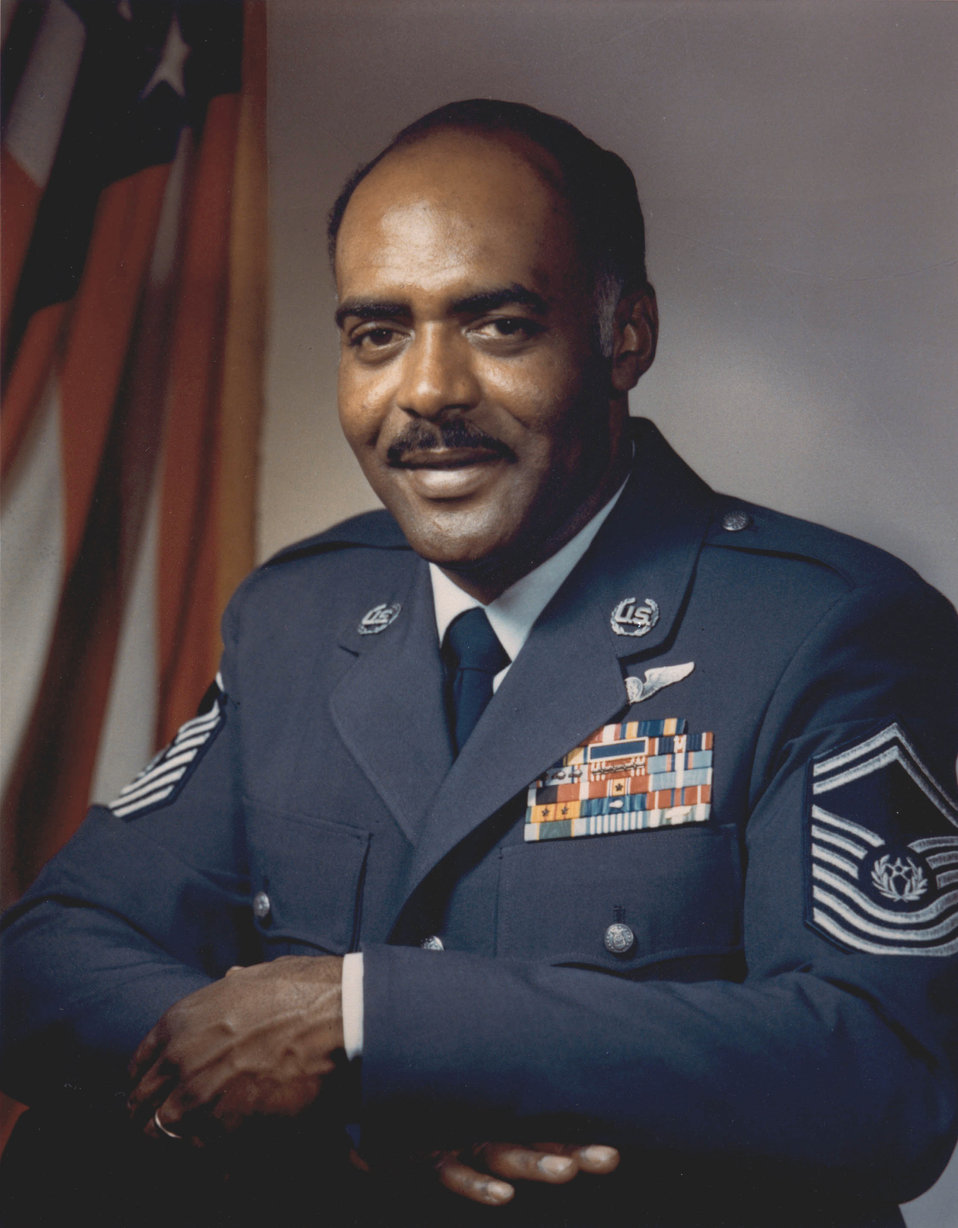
CMSAF Thomas Barnes, first African-American to hold top Air Force enlisted position